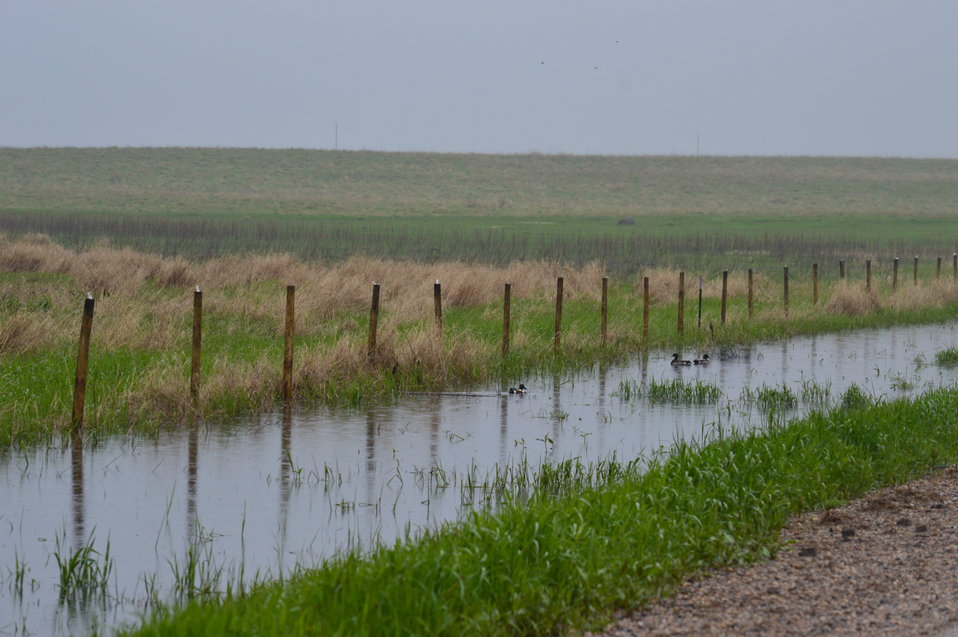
Waterfowl along boundary of Lost Lake NWR

Scenery and wildlife at Lost Lake National Wildlife Refuge in North Dakota.